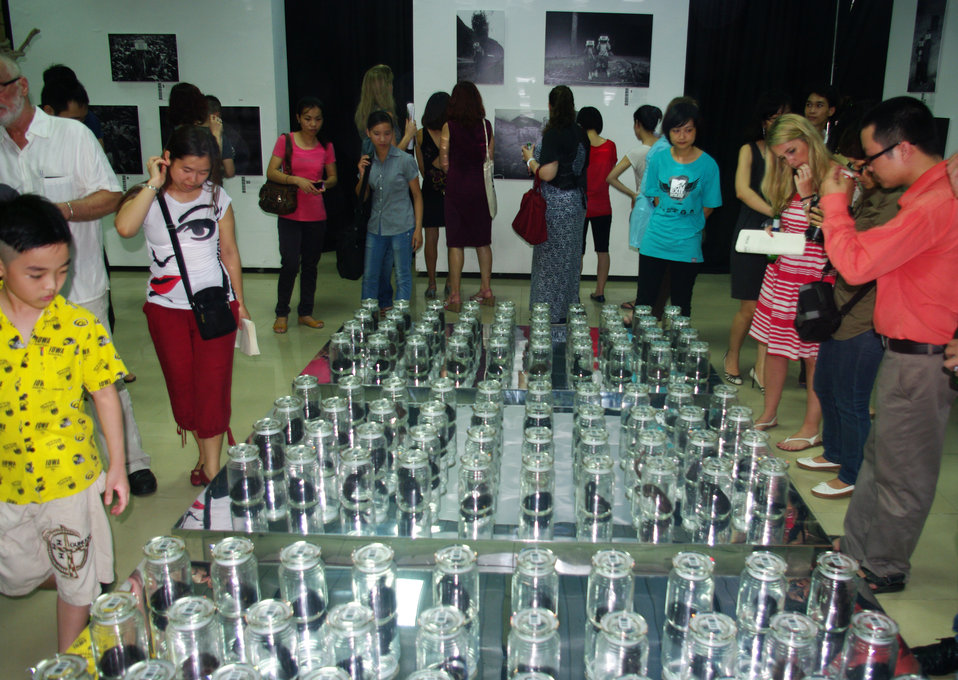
MTV EXIT opens Youth Forum in Hanoi